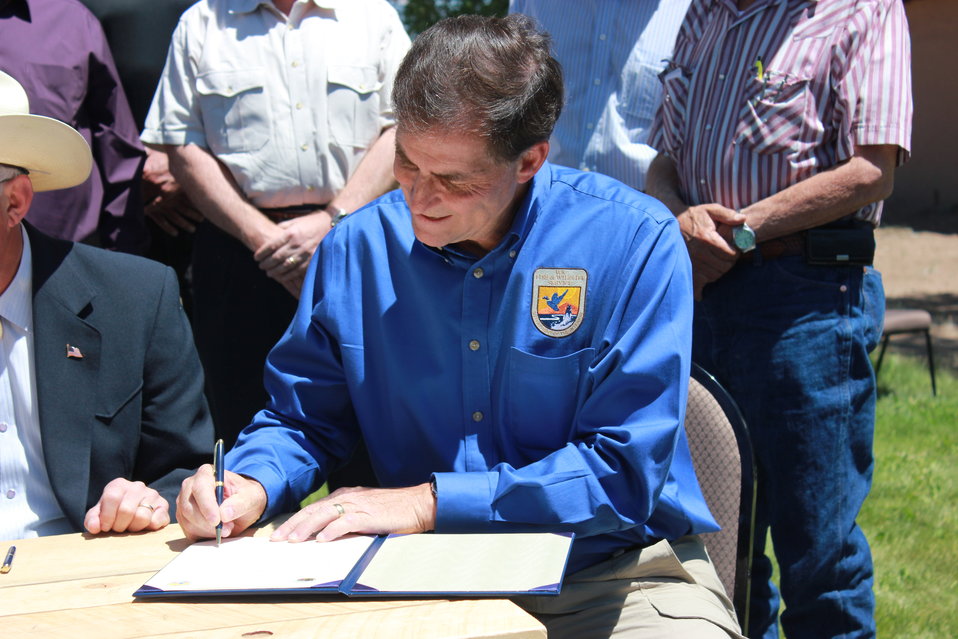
Historic Conservation Easement in Sangre de Cristo Mountains